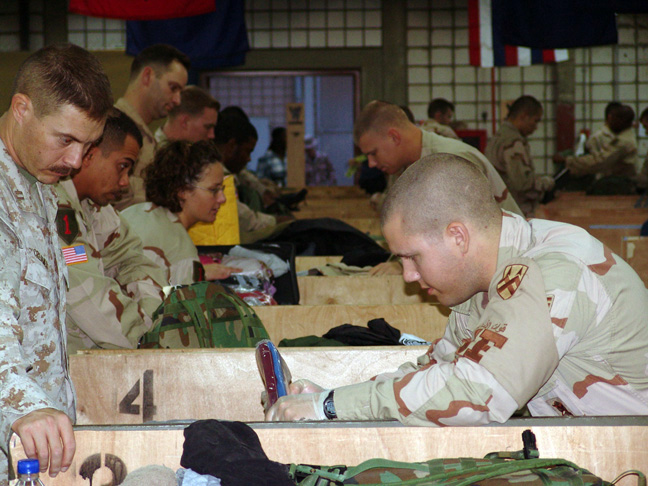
Security forces work as customs inspectors

SOUTHWEST ASIA -- Staff Sgt. Dana Hawk checks a Marine's bags before he leaves for the United States. He and other 886th Expeditionary Security Forces Squadron customs inspectors process about 100 people an hour and up to 1,600 on a busy day.